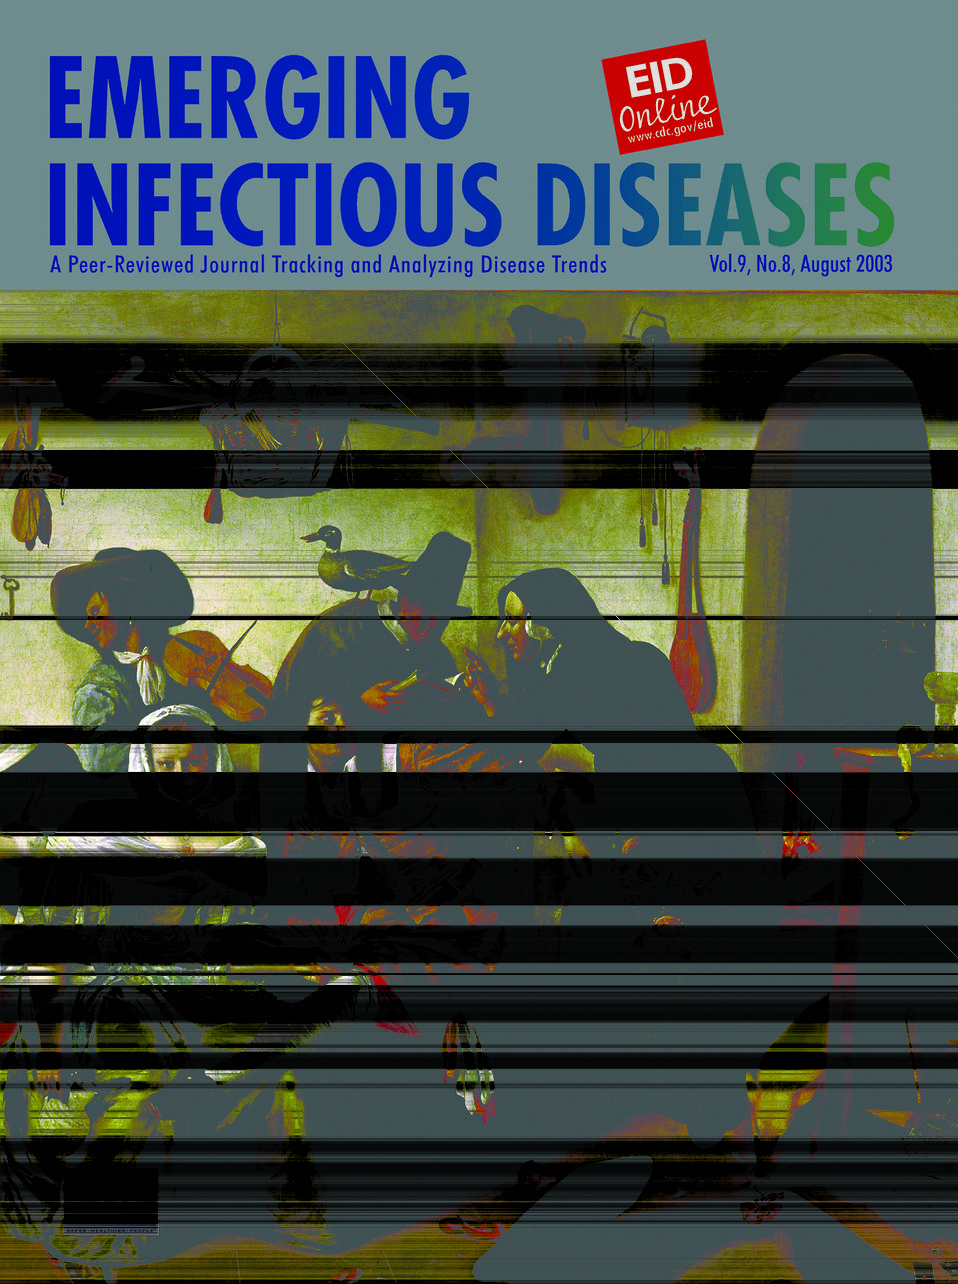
Emerging Infectious Diseases (EID) cover artwork for Volume 9, Number 8, August 2003 issue.